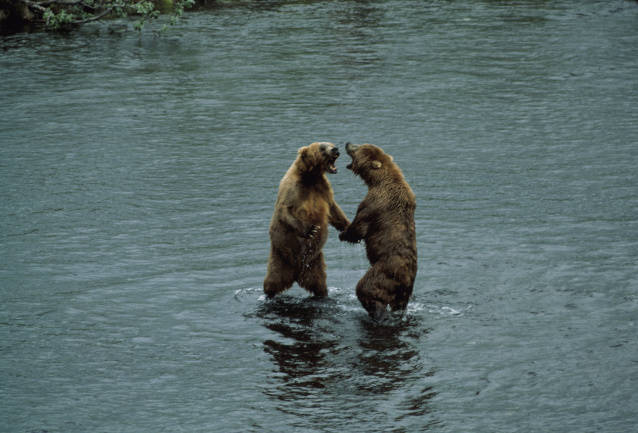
Kodiak brown bears sparring

Dog Salmon Creek, Kodiak National Wildlife Refuge